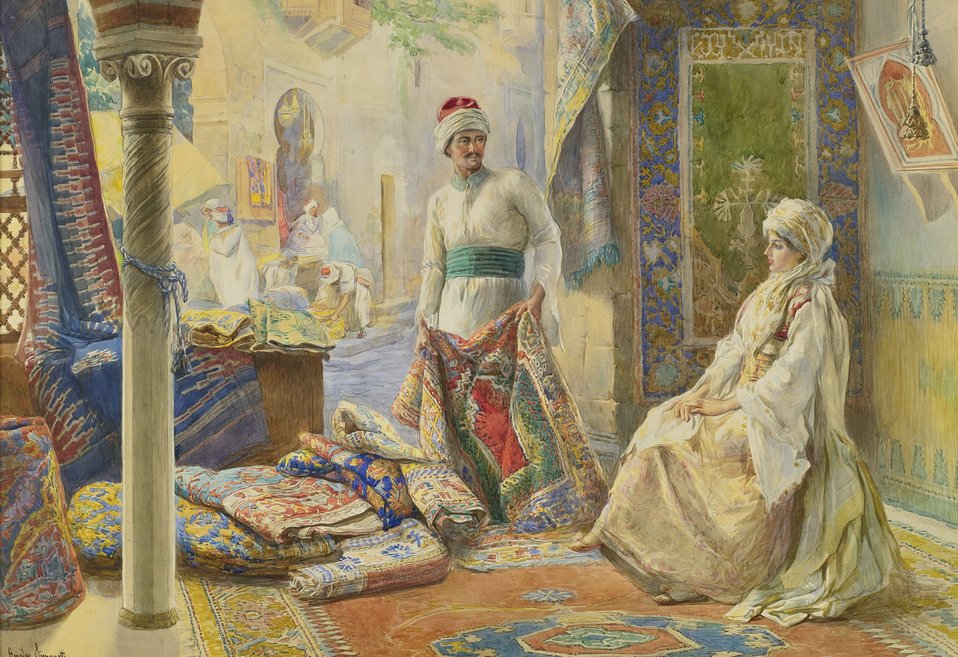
Amedeo Simonetti The rug merchant